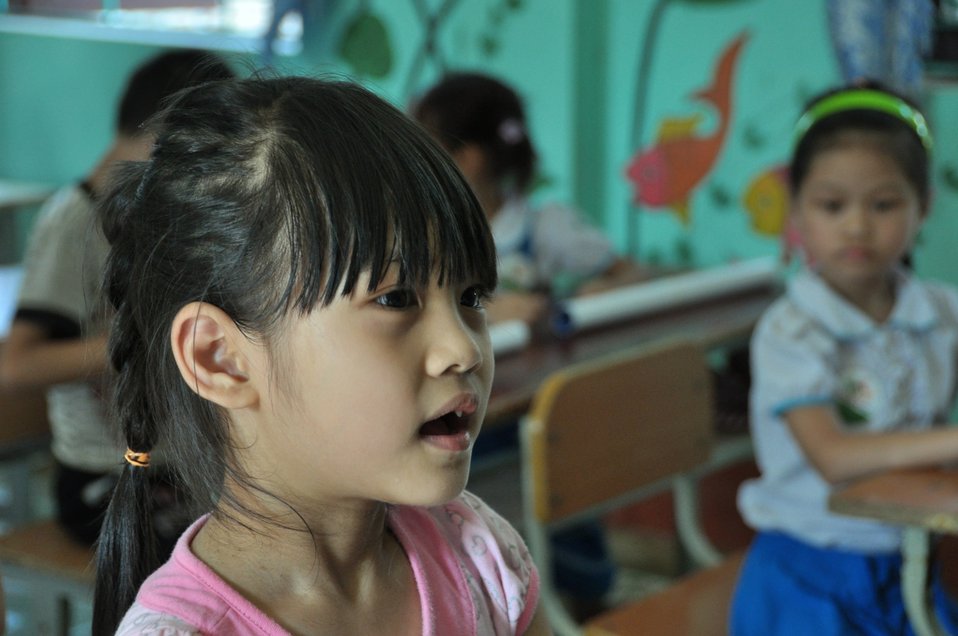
USAID supports deworming education and medication distribution in Bac Giang Province

May 20, 2013